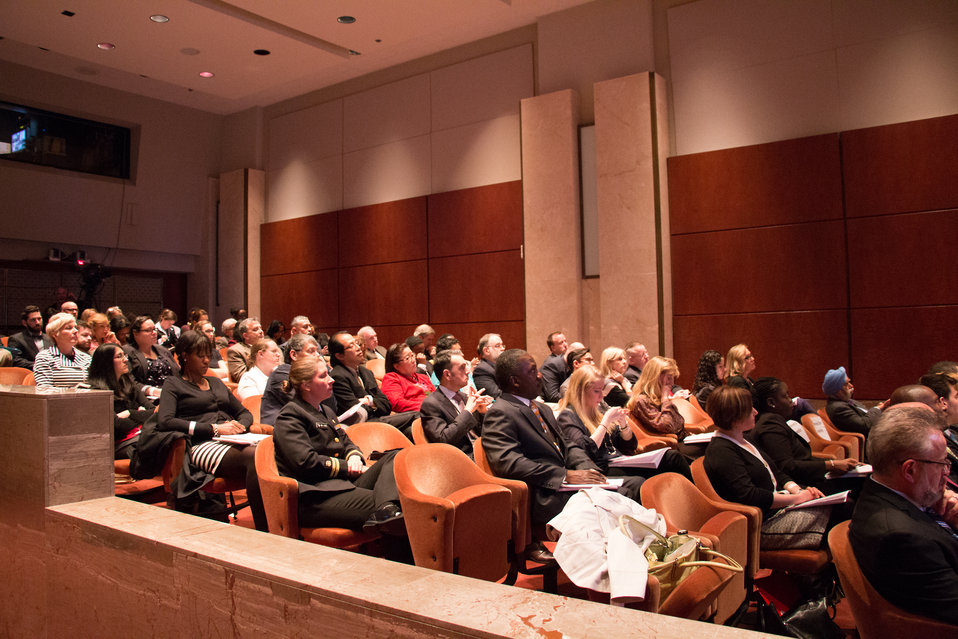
VHAP Launch (230 of 511)